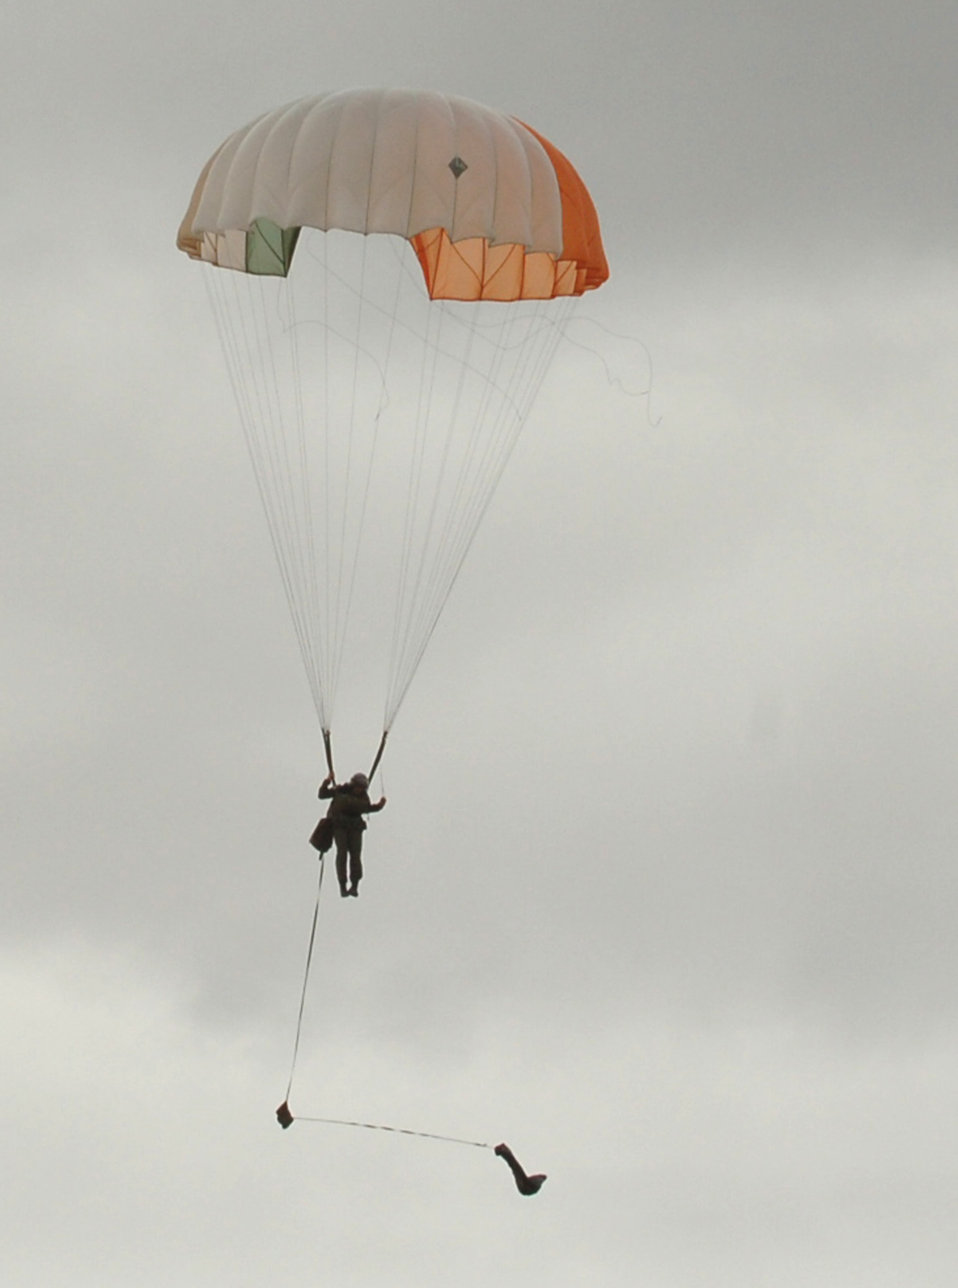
SERE specialists on target

Senior Airman Brian Daubert prepares to land during a parachute jump demonstration Sept. 18 during survival, evasion, resistance and escape training at Fairchild Air Force Base, Wash. SERE specialists provide weekly demonstrations to show students the performance characteristics of the C-9 emergency egress parachute. The deomos allow students to see firsthand the techniques they've learned in the SERE school. After all jumpers are safely on the ground, one of the parachutists becomes the isolated person, known as the IP or survivor. This begins the combat search and rescue demonstration. The IP demonstrates techniques a student may use to be recovered should they ever find themselves in a